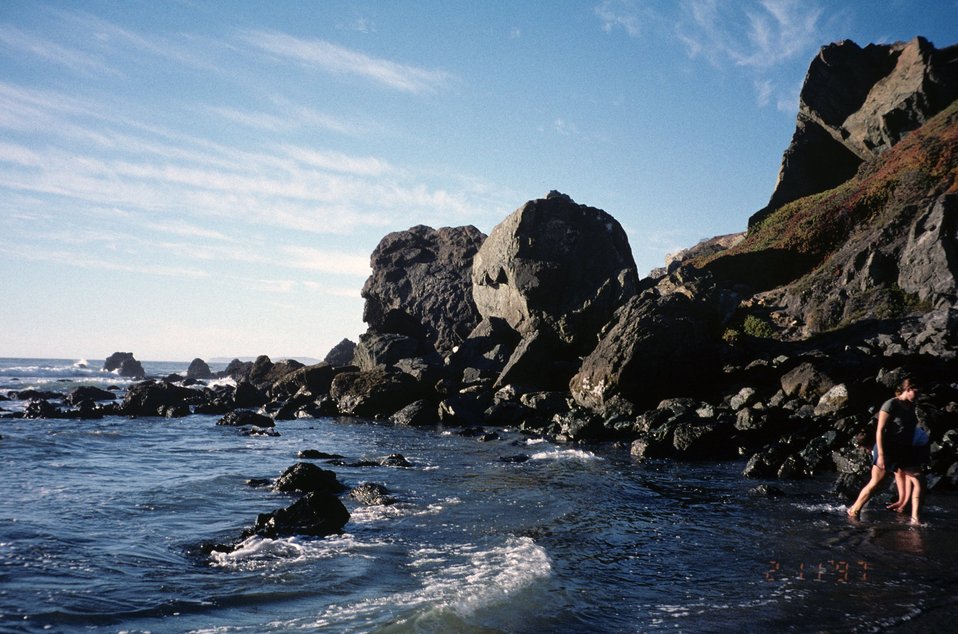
Dillon Beach